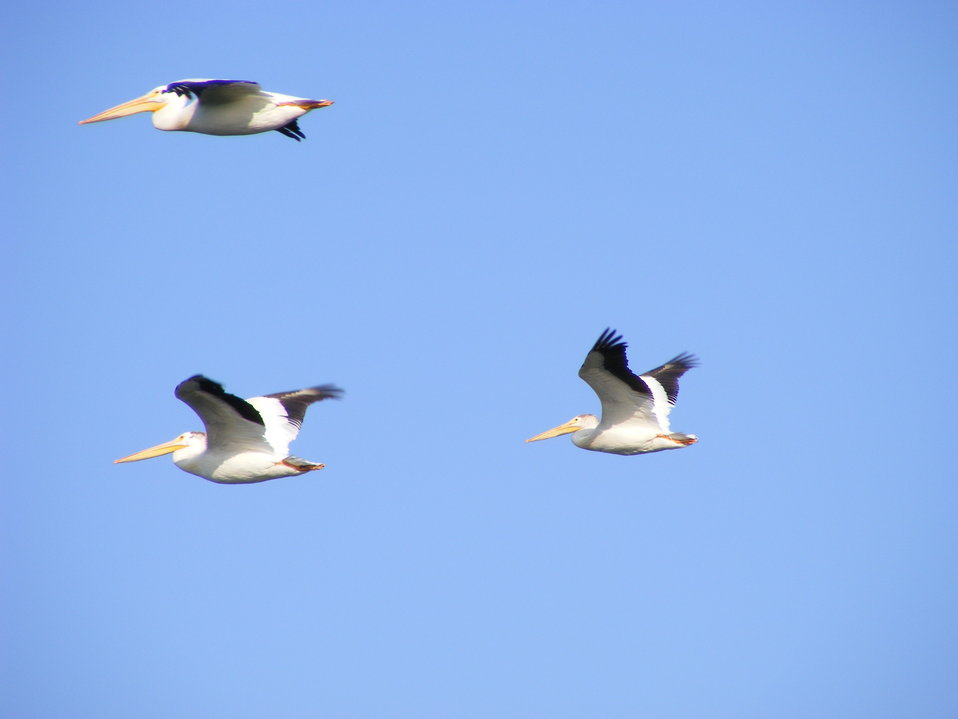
Smooth sailing

American white pelicans soar overhead on an 8-9 foot wingspan, making them one of the largest birds in North America. Although they don't breed at Waubay NWR,they are often seen fishing at the Refuge as there is a breeding colony nearby.